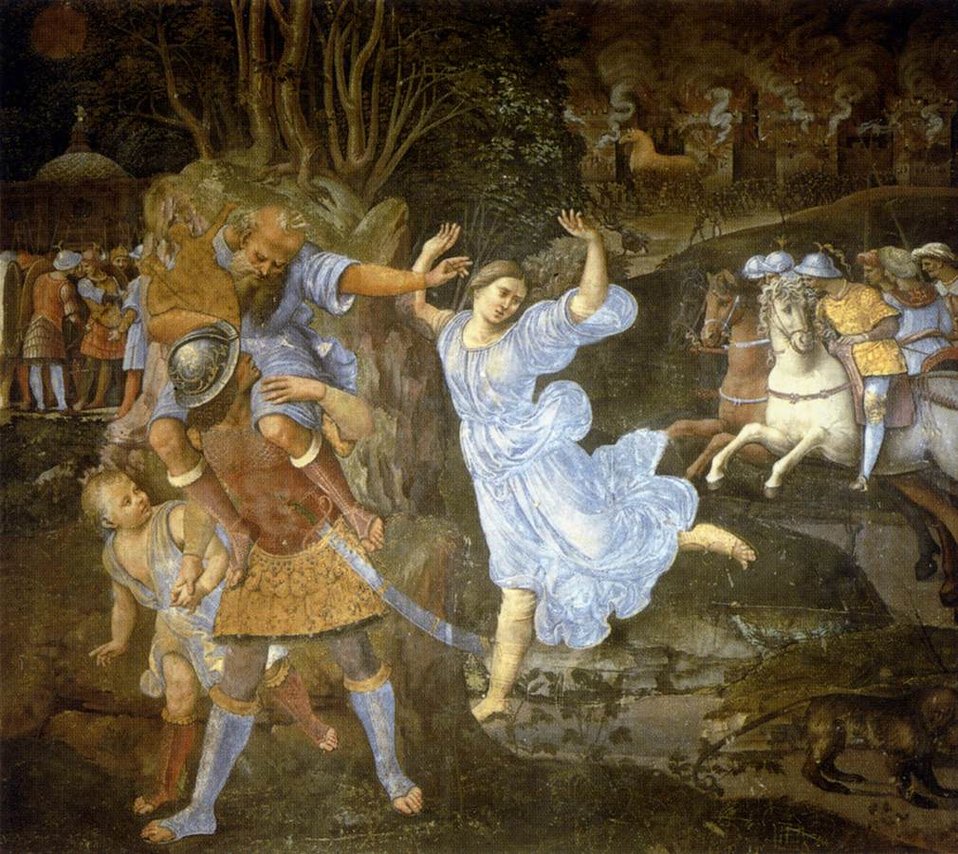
'Flight of Aeneas from Troy', fresco painting by Girolamo Genga, 1507-1510, Pinacoteca Nazionale, Siena